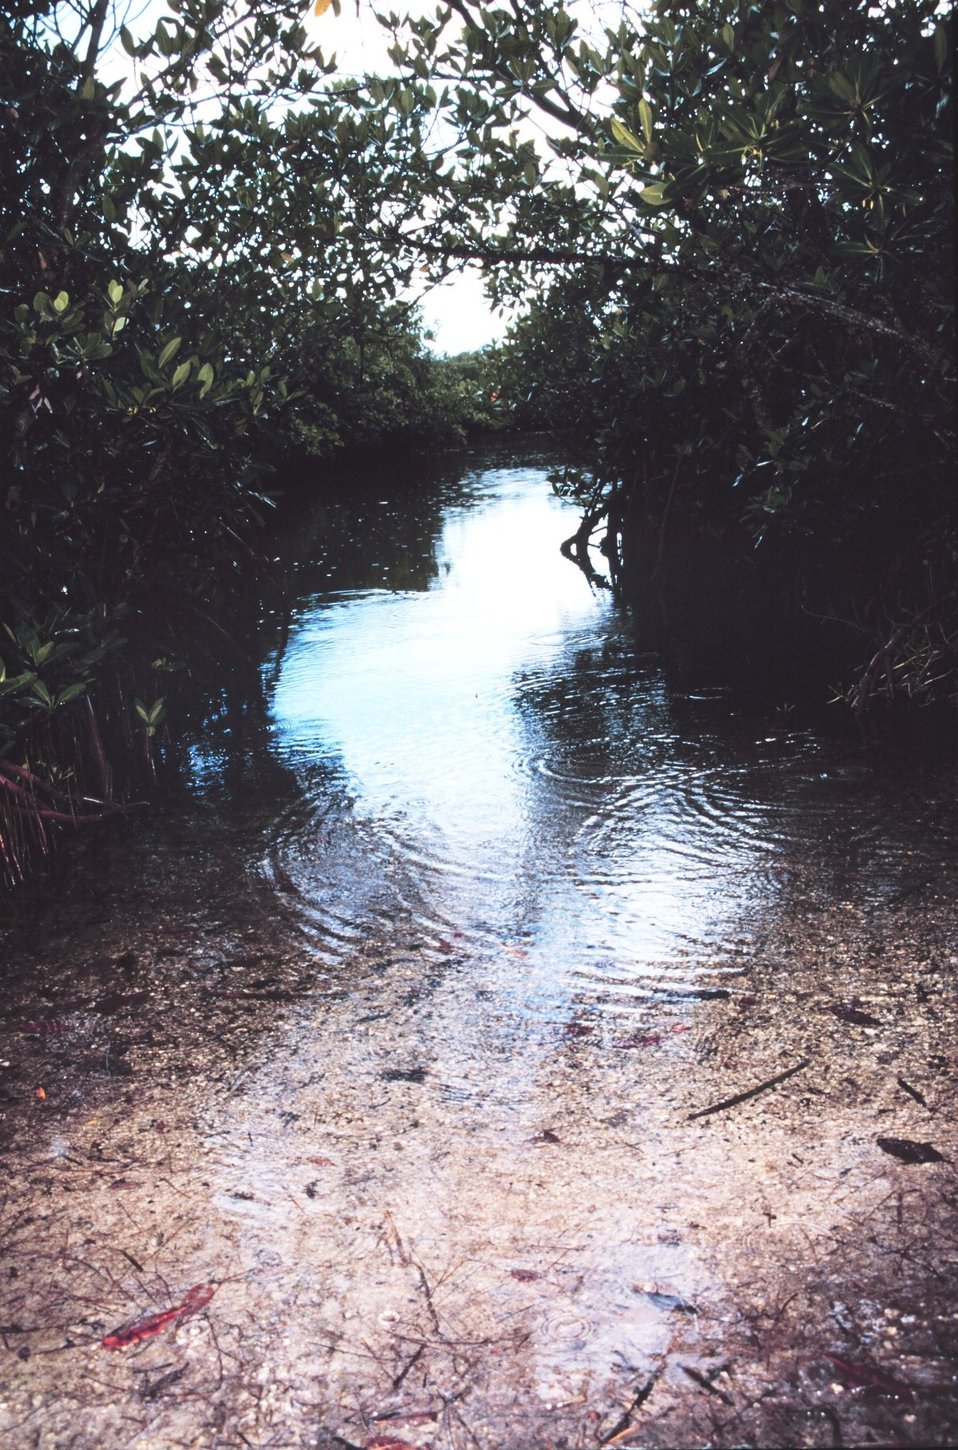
Mangrove swamp habitat at John Pennekamp Coral Reef State Park